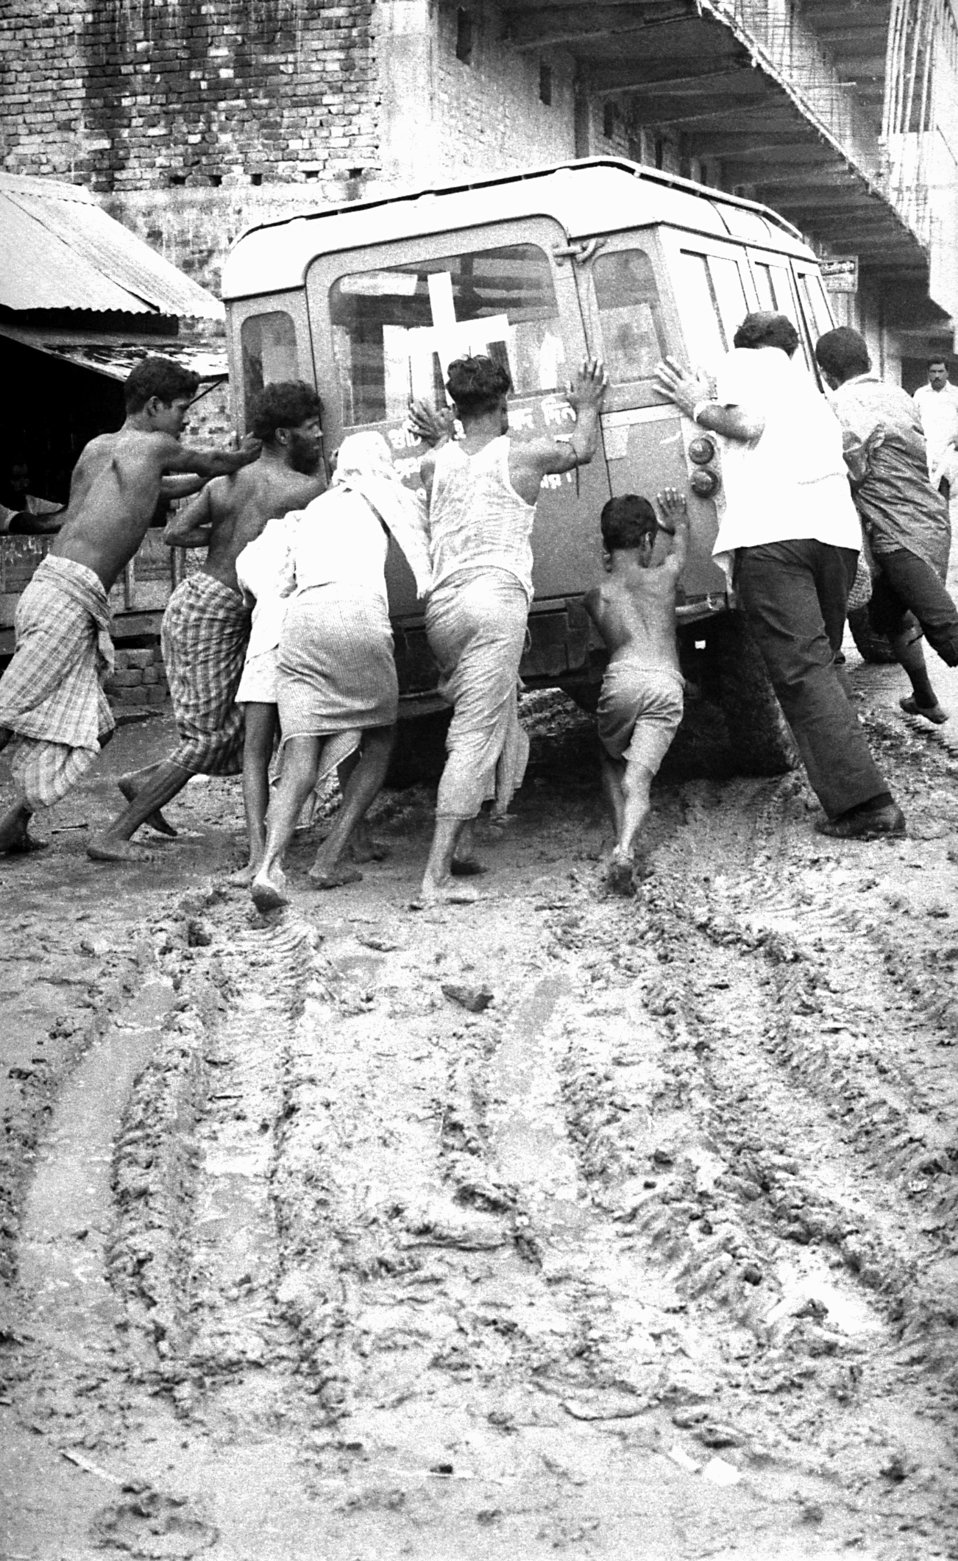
This photograph, provided by former E.I.S. officer, Stanley O. Foster M.D., M.P.H., was one of a series entitled 'The Story of One Smallpox Jeep', which depicted the travails faced by the jeep, and its occupants of public health practitioners, as they road through the Bangladesh countryside in an attempt to eradicate smallpox from the country. The image, which showed how difficult the terrain was to negotiate, as this jeep needed to be manually pushed up hill through a muddy road of rural village, was photographed by Pierre Claquin, M.D., B.A.C., who at the time was a member of the World Health Organization's Smallpox Eradication Program.